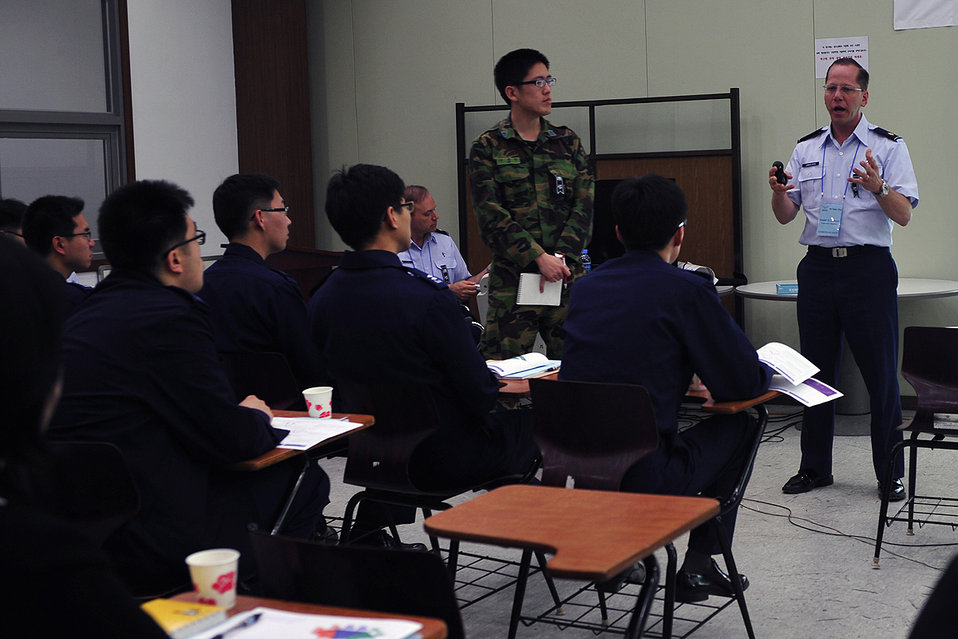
ASIST

Chaplain (Maj.) Randall Jamieson speaks to a group of South Korean air force chaplains April 27, 2010, during Applied Suicide Intervention Skills Training at Osan Air Base, South Korea. Chaplain Jamieson is from Seymour Johnson Air Force Base, N.C.